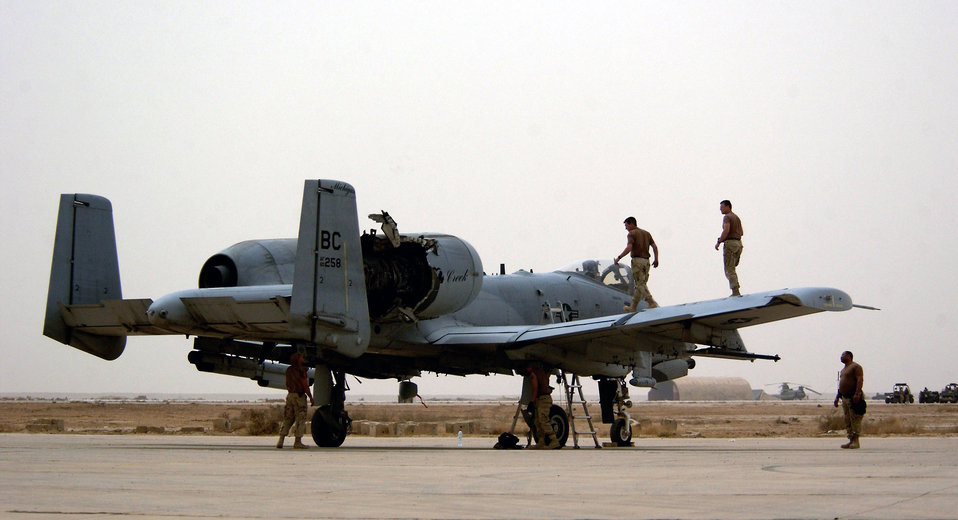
Close call

OPERATION IRAQI FREEDOM -- A-10 Thunderbolt II maintenance members from the 392nd Air Expeditionary Wing inspect their aircraft for any additional damage after it was hit by an Iraqi missile in the right engine. The A-10 made it back to the base safely.